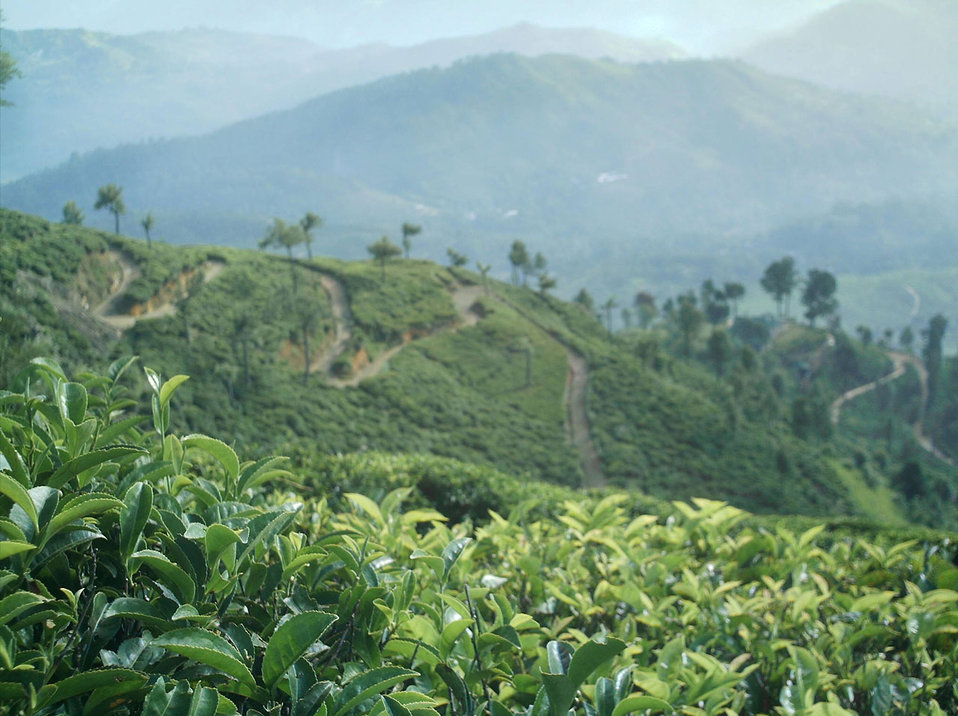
Tea estate

Beautiful tea estate in sri lanka..